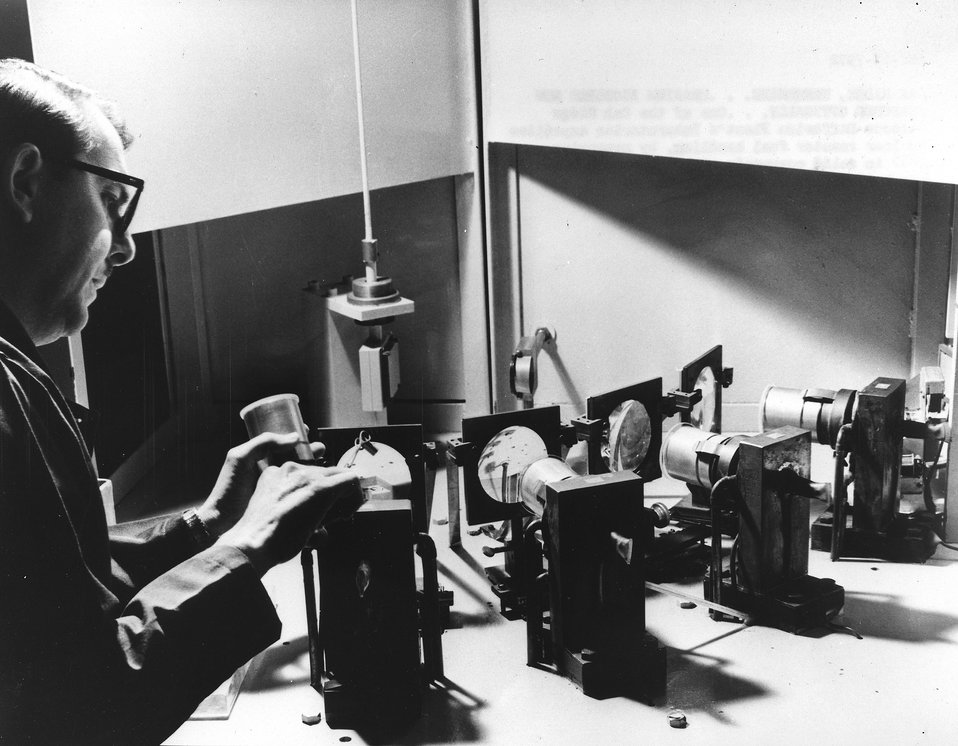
One of the Oak Ridge Gaseous Diffusion Plant's laboratories expedites nuclear reactor fuel handling, by measuring U-235 in solid compounds with an optical Spirograph it developed for this purpose. c. 1967